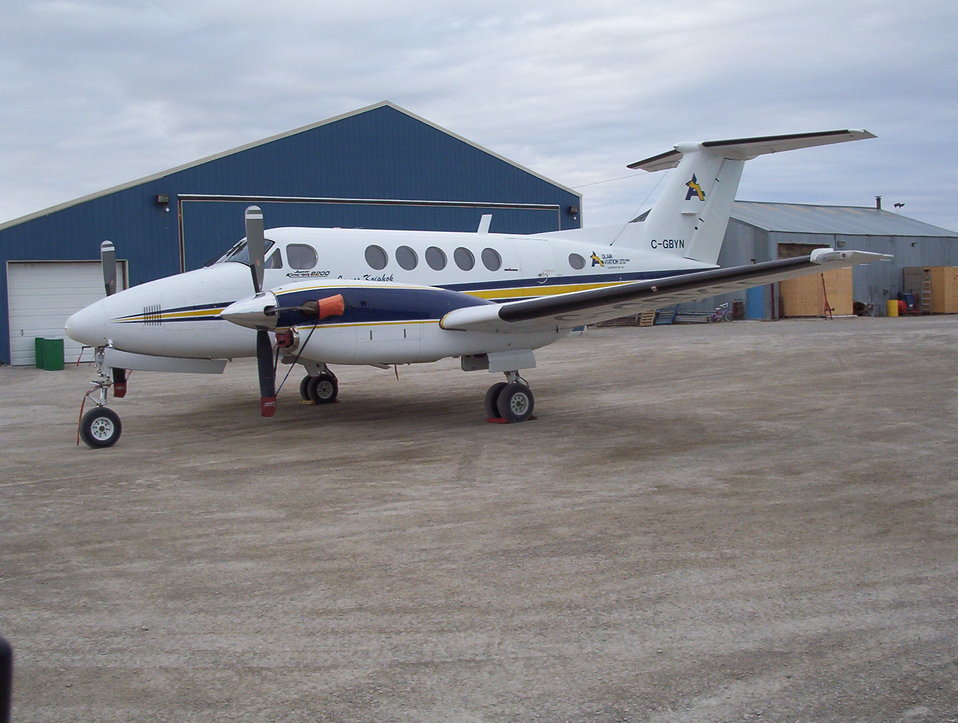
C-GBYN Adlair Aviation Ltd Beechcraft King Air 200 (BE20) 03